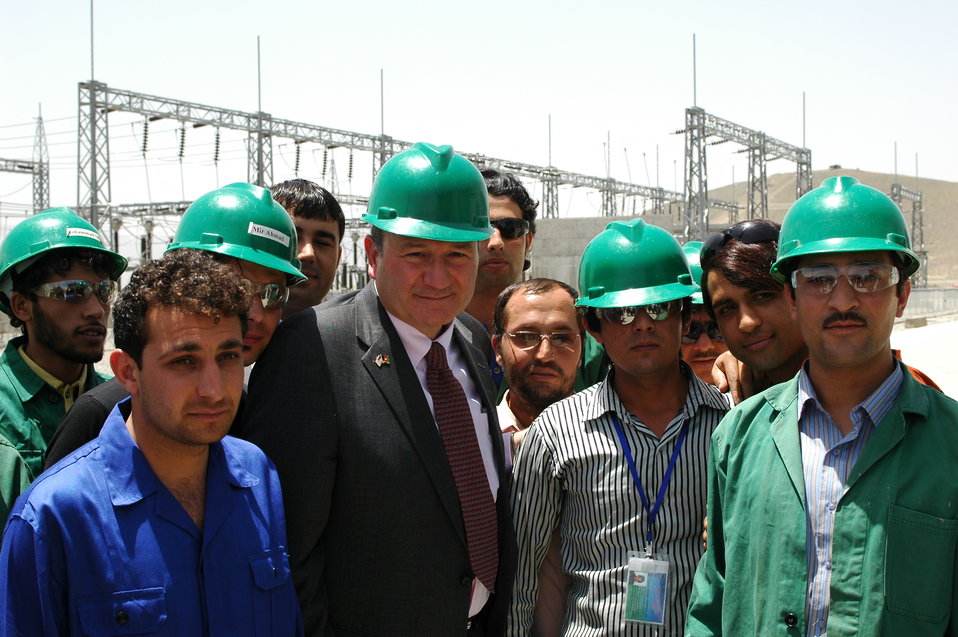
105 MW Tarakhil Power Plant Handover